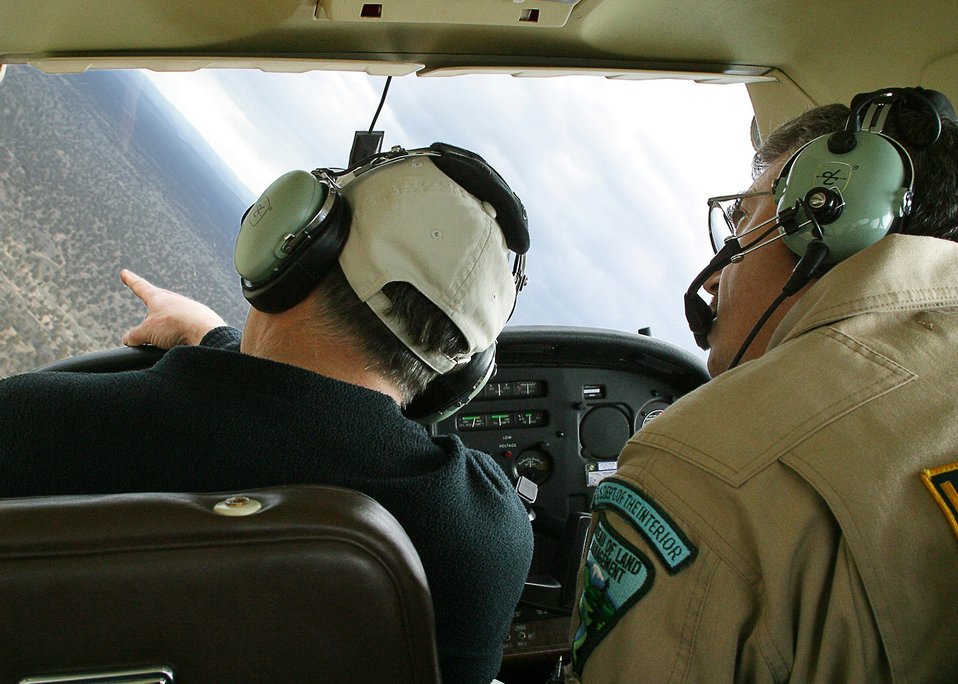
BLM Ranger Tom Teaford of the Prineville Distirict and pilot Keith Kadlicik fly aerial patrols over the rural-urban interface of public lands in central Oregon. April 12, 2003.